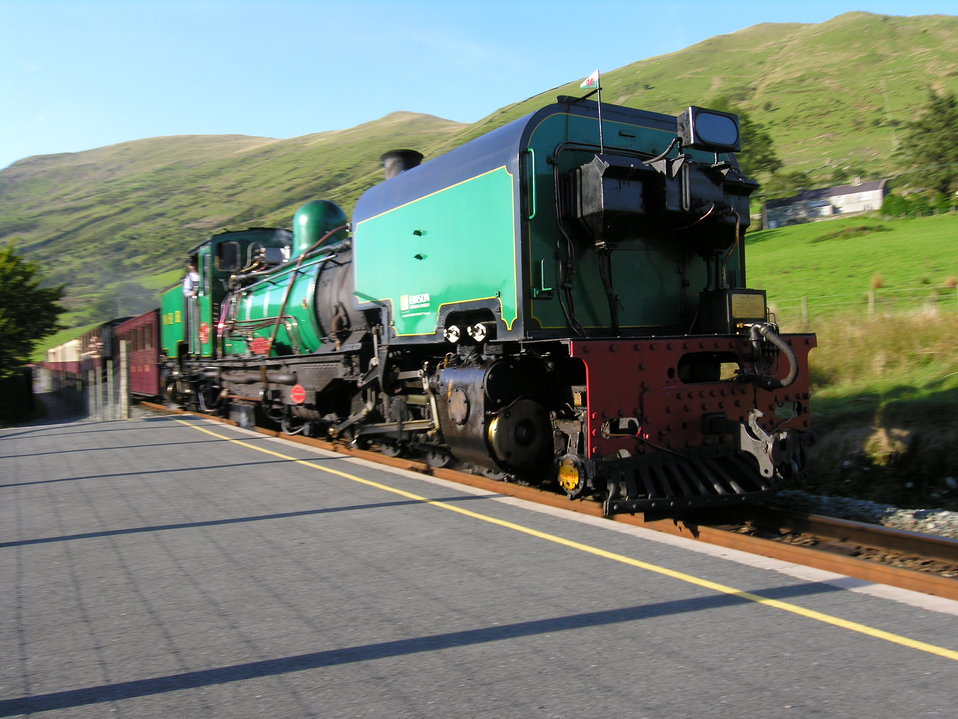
Picture by vanoord.